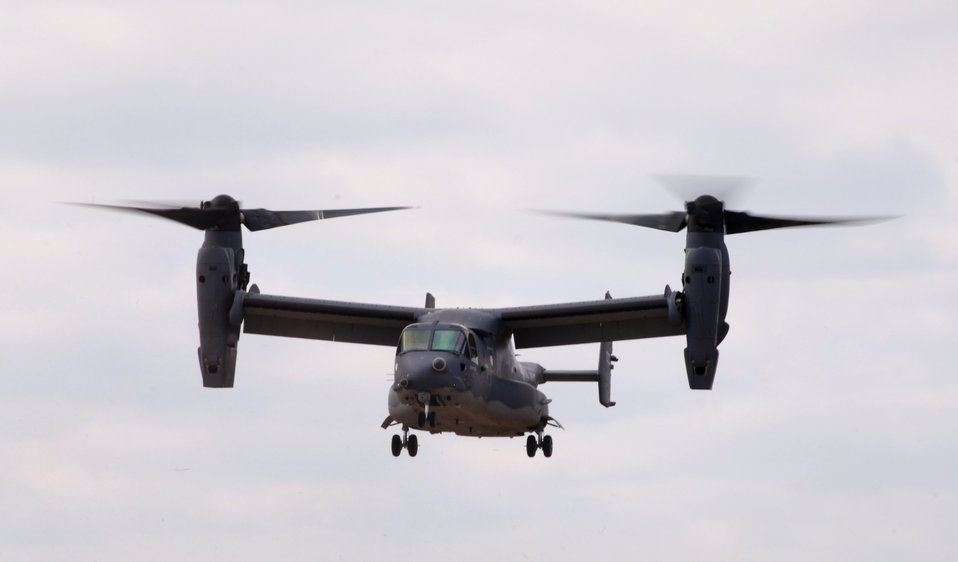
Heritage to horizons

The CV-22 Osprey flies by during its unveiling ceremony at Hurlburt Field, Fla. on Nov 16. The arrival of the CV-22 to Air Force Special Operations Command is part of Hurlburt Field's Heritage to Horizon commemoration, reflecting on the heritage of air commandos, reaffirming the commitment to the war on terrorism and resolving to continually expand capabilities. The commemoration also includes marking the re-designation of the 16th Special Operations Wing to the 1st SOW and the Air Force's 60th birthday.